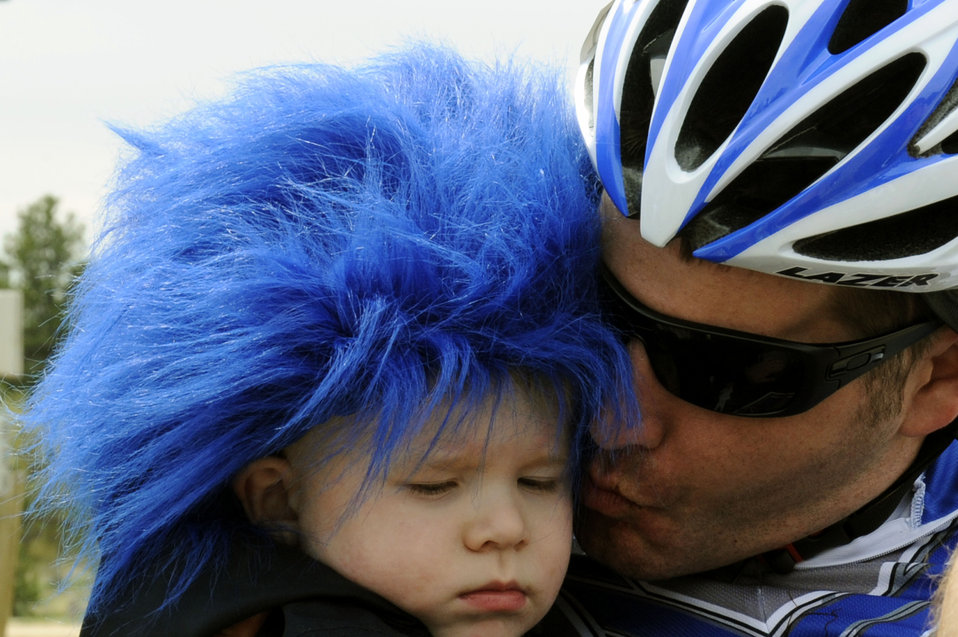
2012 Warrior Games cycling

Capt. Anthony Simone gets a congratulatory kiss from his son after completing his race May 1, 2012, as part of the Warrior Games at the U.S. Air Force Academy in Colorado Springs, Colo. Simone is recovering from a traumatic brain injury and competed in the men's recumbent bike category. He finished the race with a time of 1:35:53.